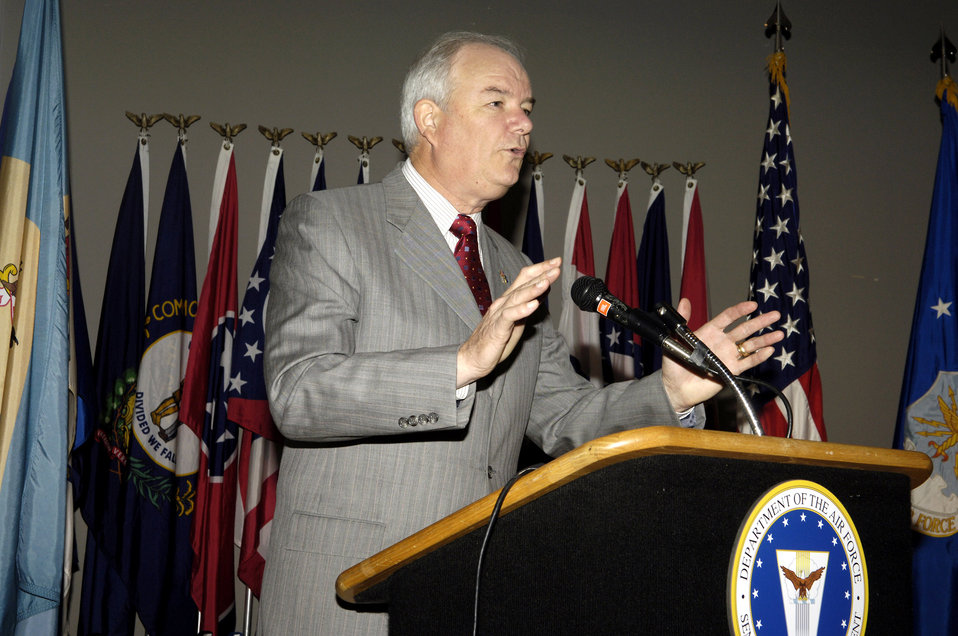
Air Force civilians win 2006 Presidential Rank Awards

Secretary of the Air Force Michael Wynne delivers a speech at the 2006 Presidential Awards held April 20 at the Women's Memorial in Arlington National Cemetery in Washington D.C. Several Air Force civilians were presented with the distinguished and meritorious rank awards.